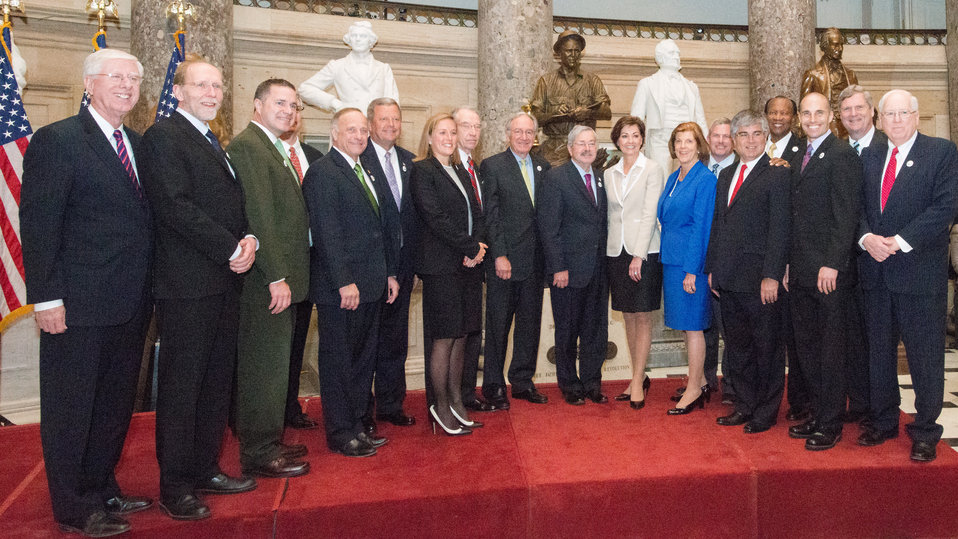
The 7-foot bronze statue of Dr. Norman E. Borlaug was unveiled in the National Statuary Hall at the U. S. Capitol in Washington, D.C. on Tuesday, Mar. 25, 2014. The unveiling was performed by Minority Leader of the House of Representatives Nancy Pelosi, Mr. Bill Borlaug (son of Dr. Borlaug), Agriculture Secretary Tom Vilsack, Speaker of the House of Representatives John Boehner, Iowa Governor Terry Branstad and Majority Leader of the U.S. Senate Harry Reid. Today commemorates 100 years since Dr. Borlaug’s birth. Through his scientific and humanitarian achievements, Nobel Laureate Dr. Norman E. Borlaug (1914-2009) has been credited with saving millions of people from starvation in developing countries. His collaborative work with scientists in Mexico on a high-yielding, disease resistant dwarf wheat sparked the Green Revolution of the 1960s. The National Statuary Hall Collection in the U.S. Capitol is composed of statues donated by individual states to honor persons notable in their history.